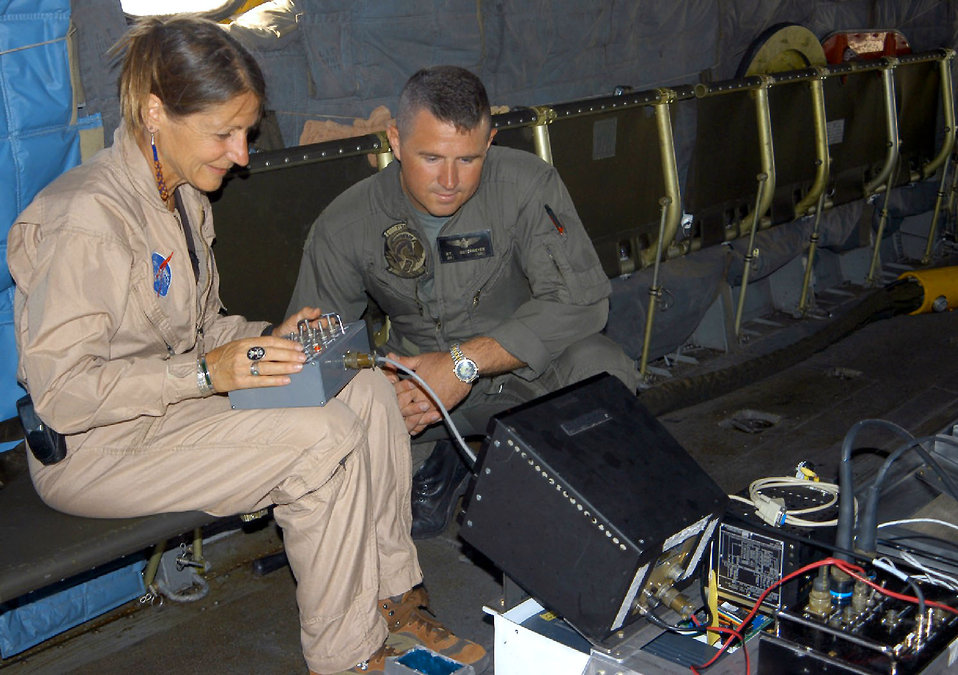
Radar check

EDWARDS AIR FORCE BASE, Calif. -- Jeannette van den Bosch (left) and Marine Maj. Rick Ostermeyer check radar equipment. Officials from the NASA Dryden Flight Research Center, Marine Heavy Helicopter Squadron 769 and the base's environmental management directorate are working to detect hazardous-waste sites. Van den Bosch is a NASA Airborne Science Facility sensor manager, and Ostermeyer is a CH-53E helicopter pilot.